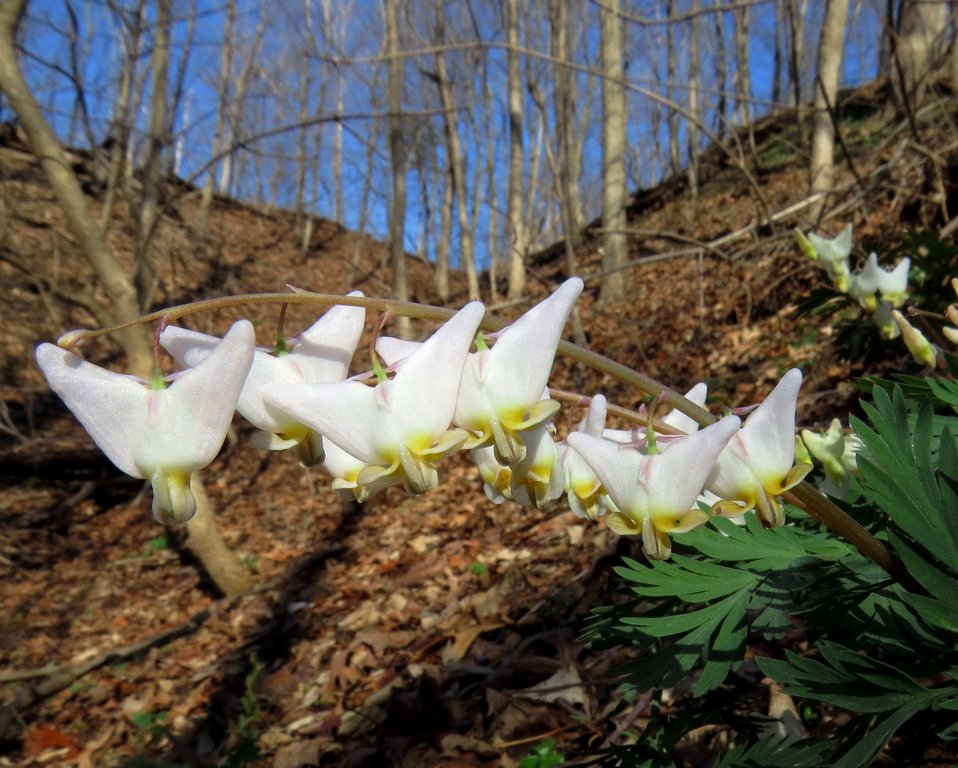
Dutchmans Breeches